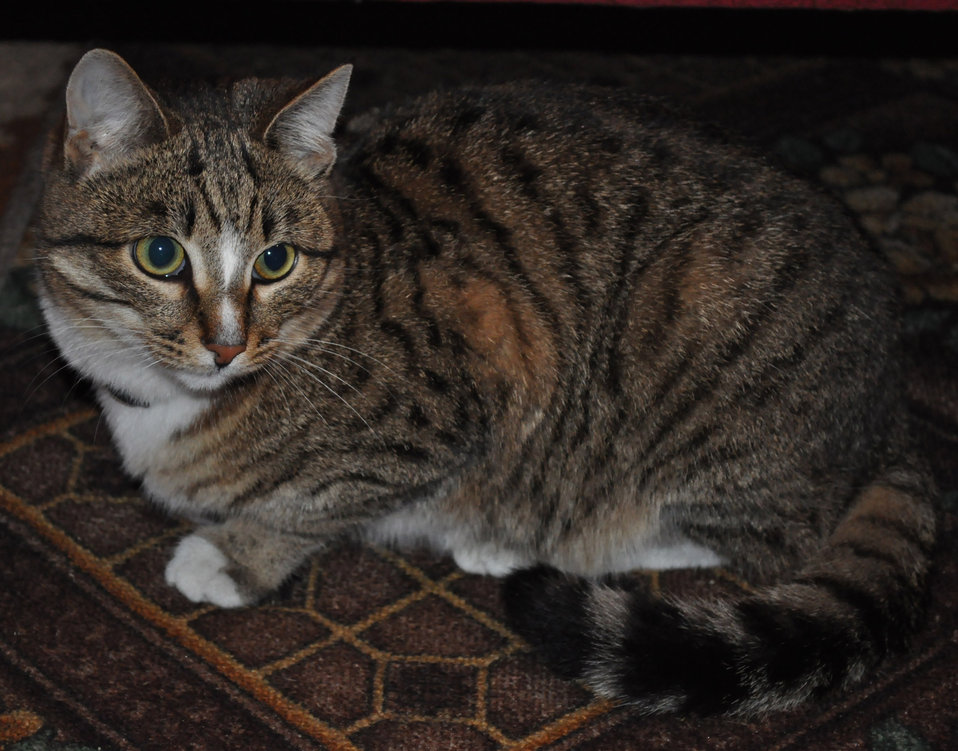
Tabby

Large striped housecat.